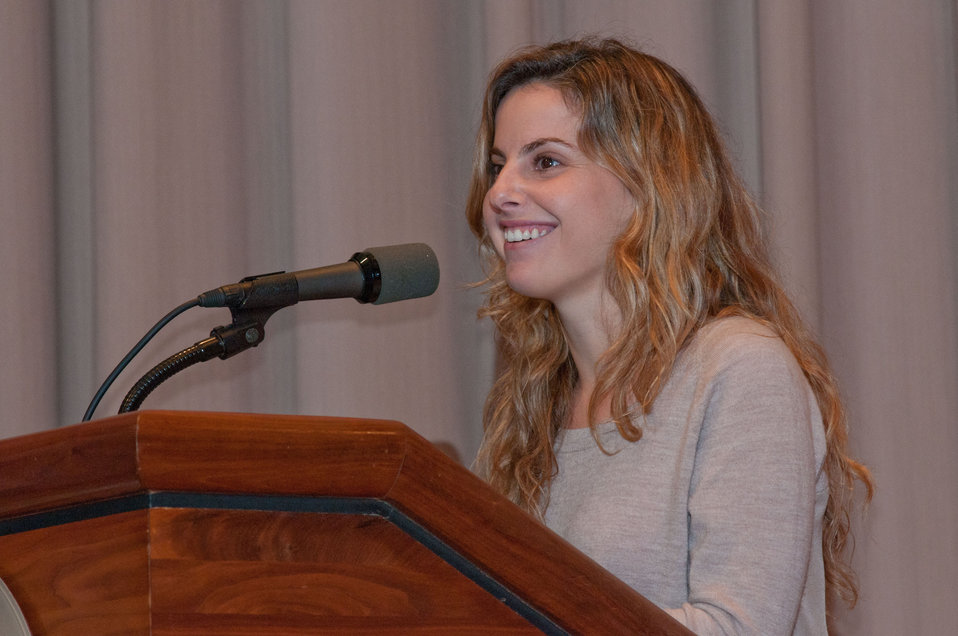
Graduation day of the 2011 U.S. Department of Agriculture (USDA) Executive Master Gardeners, on Tuesday, November 8, 2011 in Washington, DC. During the past six-weeks, students contributed 40-hours of volunteer time, completed studies and testing to receive their certificates today as an Executive Master Gardener. Many of the sessions occurred before work hours, during lunchtime or at community garden project sites such as Powell Middle School. USDA challenges its employees to establish People's Gardens at USDA facilities worldwide or in community gardens. People's Gardens vary in size and type, but all have a common purpose - to help the community and the environment. To learn about the People’s Garden Initiative visit www.usda.gov/wps/portal/usda/usdahome?contentid=peoples g....